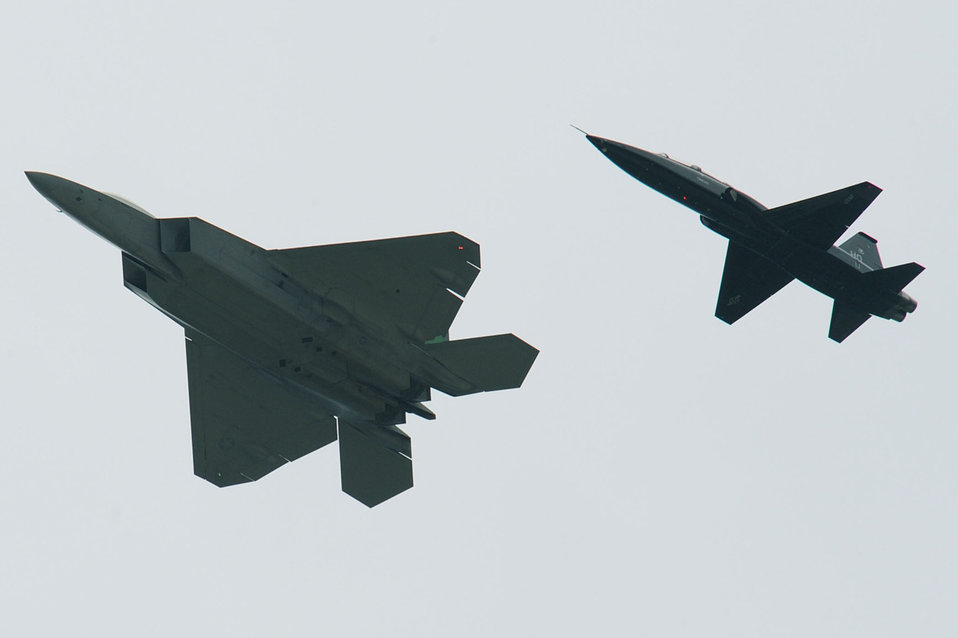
T-38

An F-22 Raptor escorts a T-38 Talon onto Langley Air Force Base, Va., April 1, 2011. The T-38, from Holloman AFB, N.M., is here for six months to help train F-22 Raptor pilots.